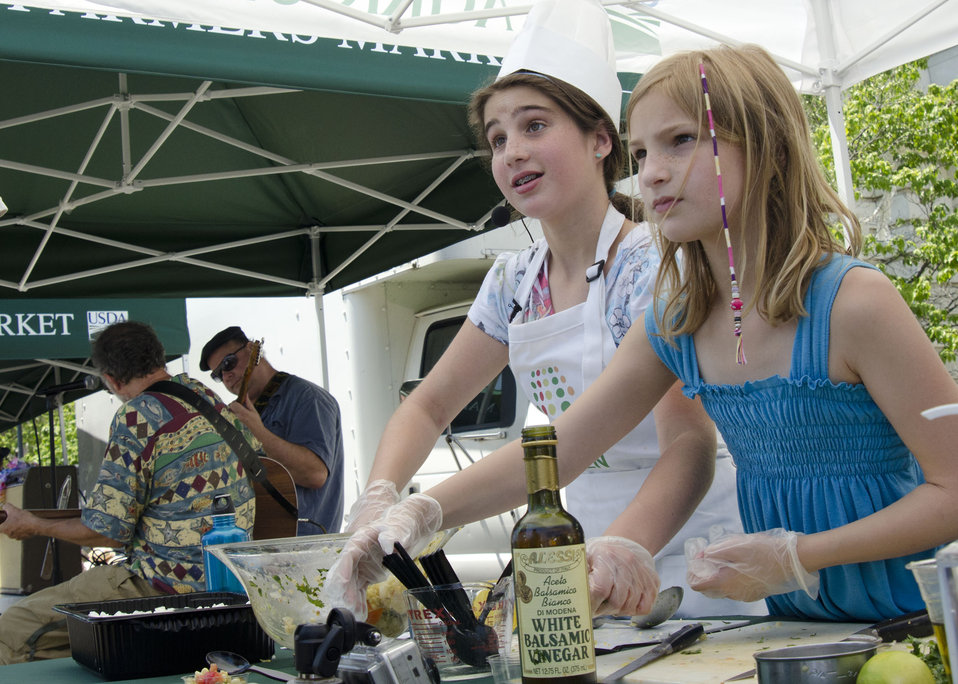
Kid Chef Lily Gravitz, 12, (left) along with her sister Ella, 9, prepare Mexican inspired corn salad during her cooking demonstration at the U. S. Department of Agriculture Farmers Market, located in Washington, DC, Friday, July 1, 2011.